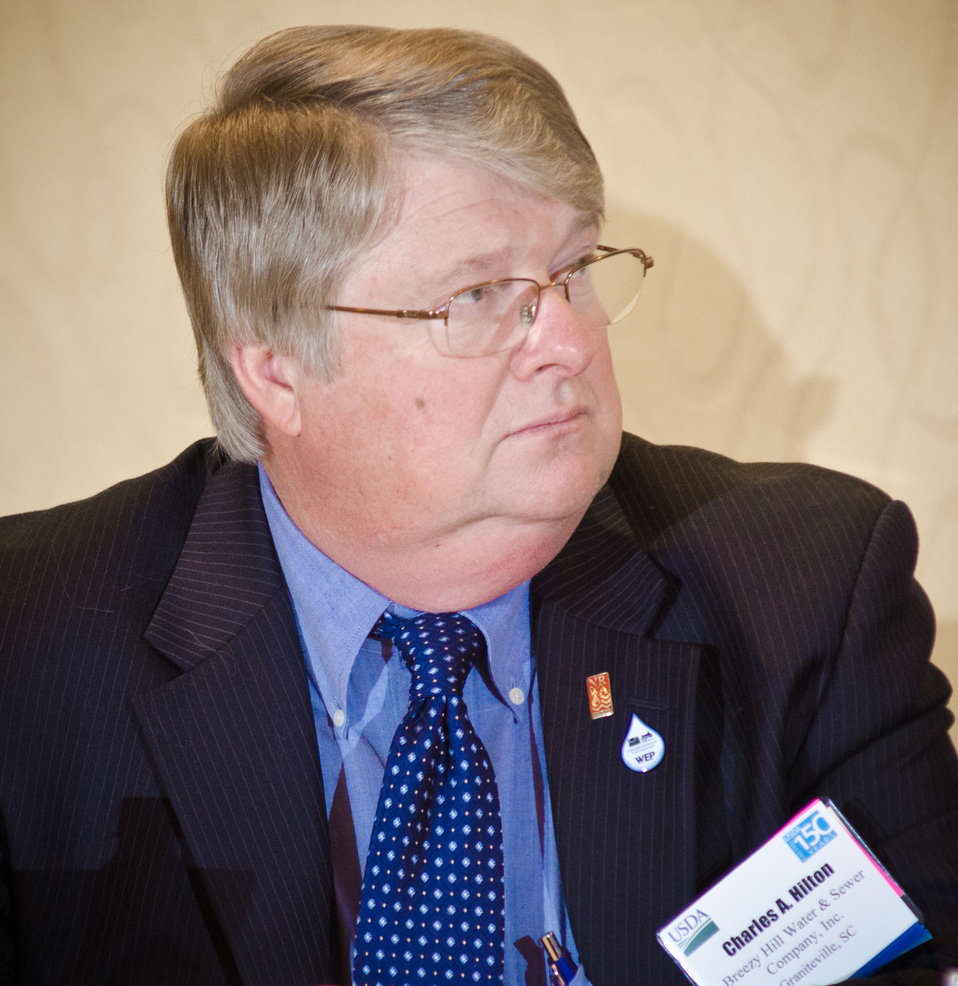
Breezy Hill Water and Sewer Company, Inc., General Manager Charles A. Hilton talked about ' The Rural Value Proposition for Business Development & Expansion' during the Rural Development session on “Why Every American Should Care About the Future of Rural Water,” at the 2012 Agricultural Outlook Forum, “Moving Agriculture Forward, Growing, Innovating and Celebrating 150 Years” held at the Crystal Gateway Marriott Hotel, Arlington, Virginia, Friday, on February 24, 2012. This year’s forum coincides with the 150th anniversary of the Department of Agriculture addressing economics, marketing, research, food safety, nutrition, conservation, rural development, alternative energy, trade and many other agricultural issues.